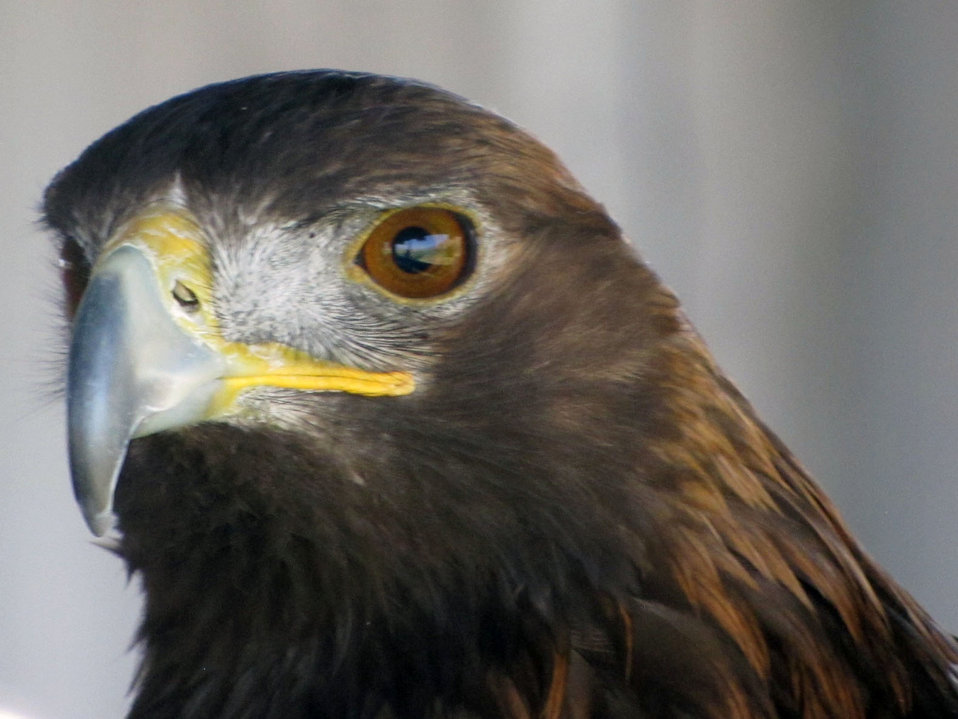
Guest Appearance

A golden eagle visits the National Elk Refuge during a presentation by the Teton Raptor Center, which gives a program at the visitor center once or twice a year. The popular educational program features a variety of live birds.

The Teton Raptor Center is a nonprofit organization that takes in injured, ill, and orphaned birds of prey year-round and provides veterinary care and rehabilitation in an effort to return raptors to the wild.